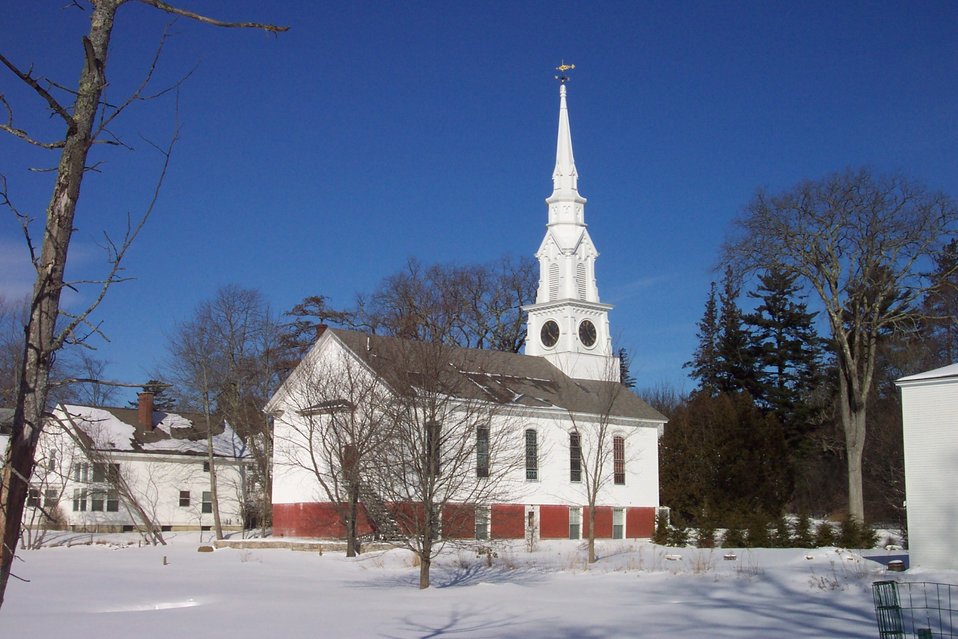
A beautiful New England Church at Castine. Note the fish-shaped weather vane on the steeple.